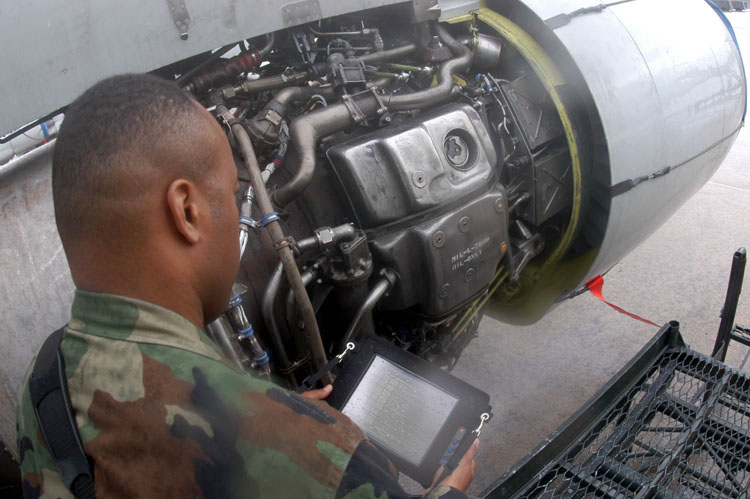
Wearable computers move to flightline

ROBINS AIR FORCE BASE, Ga. -- Tech. Sgt. Matt Jones uses a new wearable computer while inspecting an engine here. With the computers, maintainers will be able to identify, order, ship and pay for parts directly from the flightline. Sergeant Jones is the integrated electronic technical manual program manager.